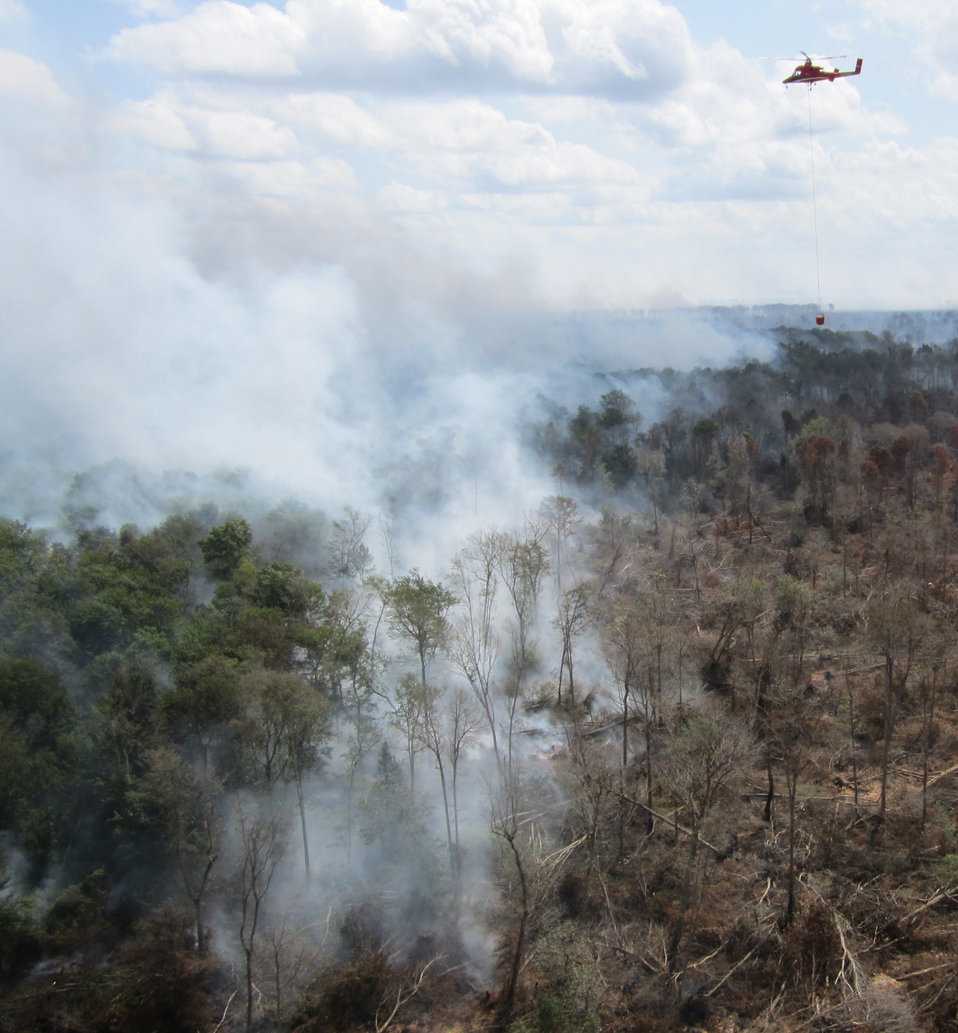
Help on the way

Suffolk, VA, August 2011: A helicpopter with a bucket arrives to drop water on a hot spot at the Lateral West Fire on Great Dismal Swamp National Wildlife Refuge.